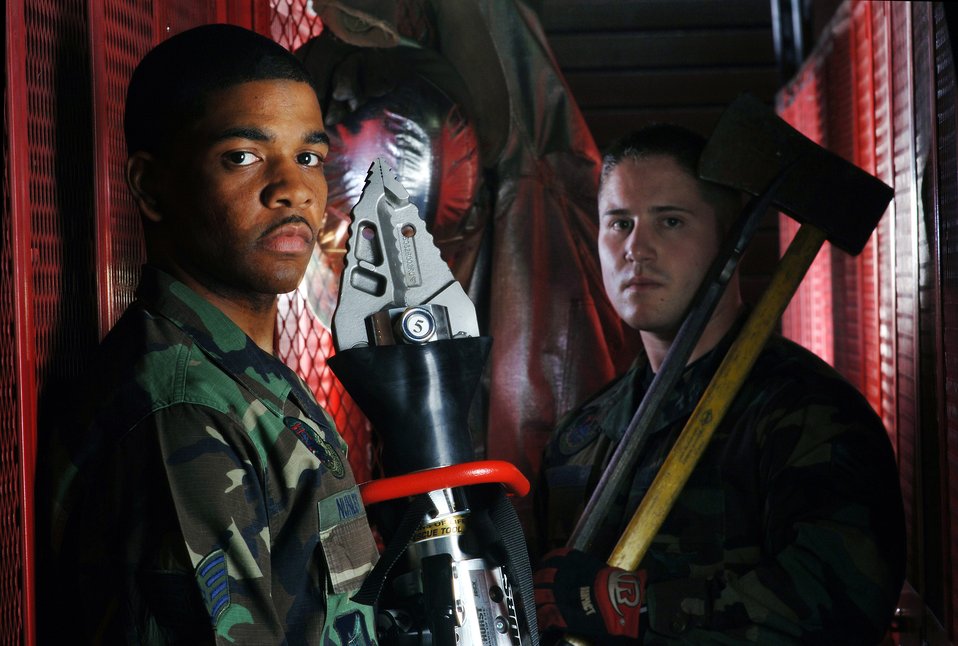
Fighting fire

Staff Sgt. Gary Nunley (left) holds a Jaws of Life while Senior Airman Christopher Provencal carries a bar and ax. They are on their way to field training at Yokota Air Base, Japan, on Friday, April 28, 2006. Both Airmen are firefighters with the 374th Civil Engineer Squadron.